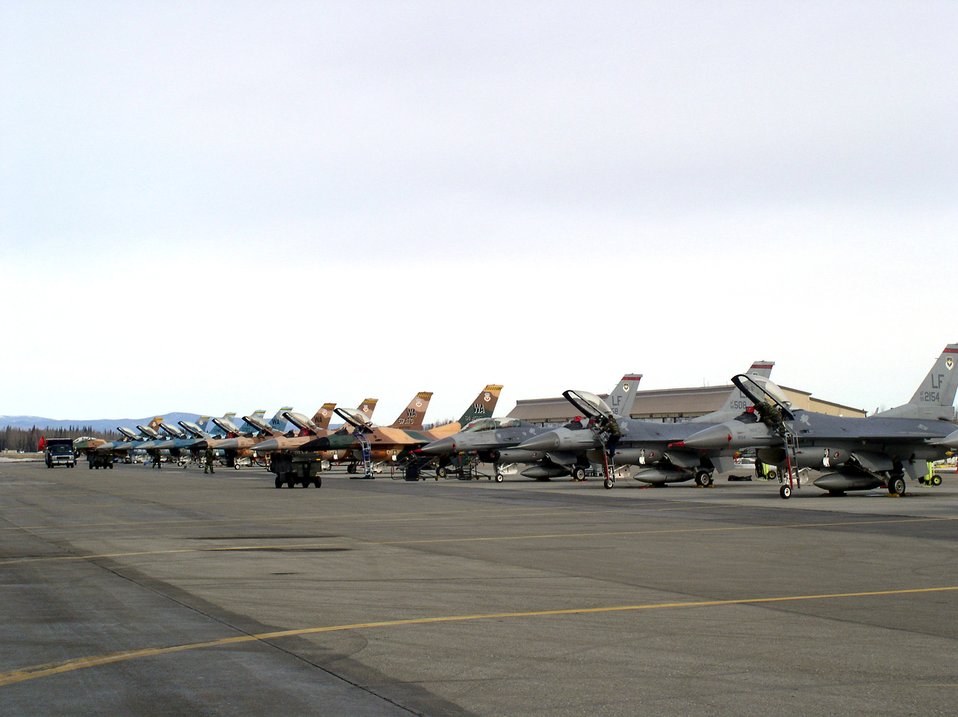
Aggressors vs. friendlies

F-16 Fighting Falcons from the 63rd Fighter Squadron at Luke Air Force Base, Ariz., and the 64th Aggressor Squadron at Nellis AFB, Nev., line the flightline at Eielson AFB, Alaska, for Red Flag-Alaska 06-2. The exercise, previously called Cope Thunder, was enhanced to provide training on the same level as the Red Flag exercise at Nellis.